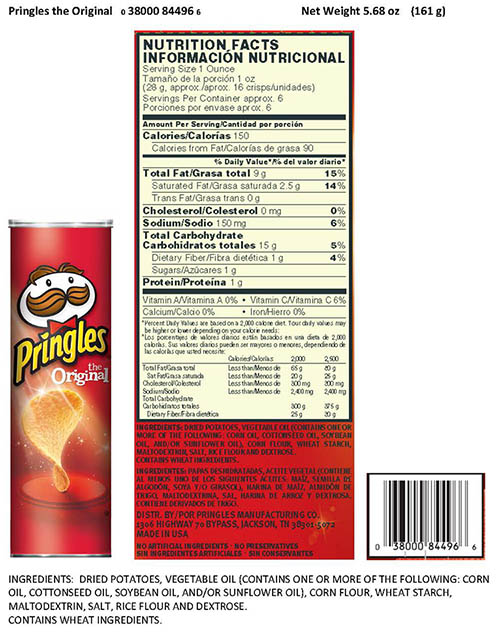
RECALLED – Original crisps

January 27, 2014 – Product Recall – Pringles® Issues Allergy Alert and Voluntary Recall of One Hour’s Worth of Production of Original Crisps Due to Undeclared Milk.